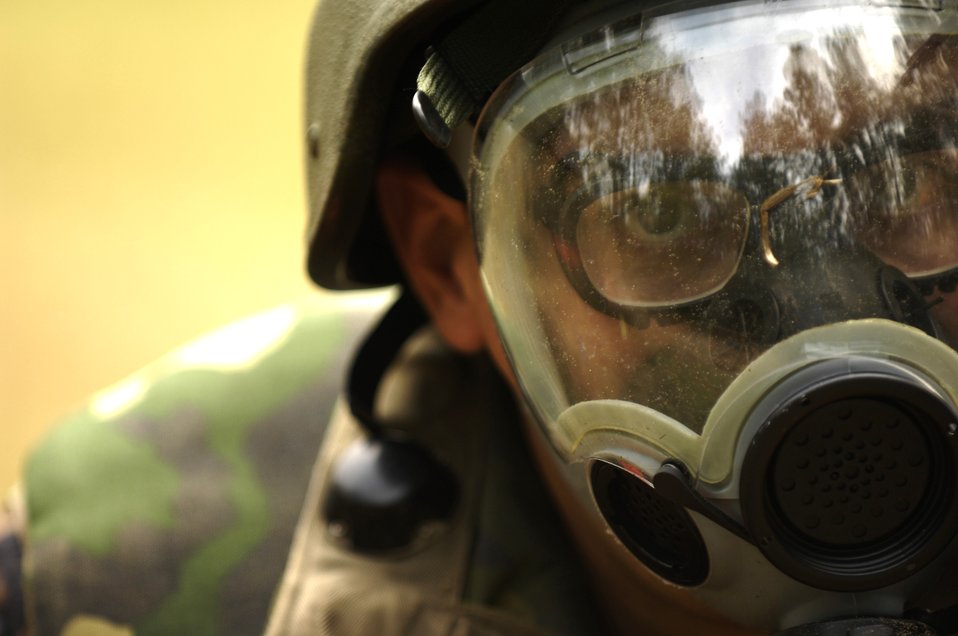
Testing their skills

Airman 1st Class Lee Olson dons a gas mask during a simulated gas attack while participating in the Expeditionary Combat Skills Training Dec. 7. at Charleston Air Force Base, S.C. The ECST is a three-day tactical operations course to prepare Charleston Airmen for future deployments. Airman Olson is with the 437th Medical Group.